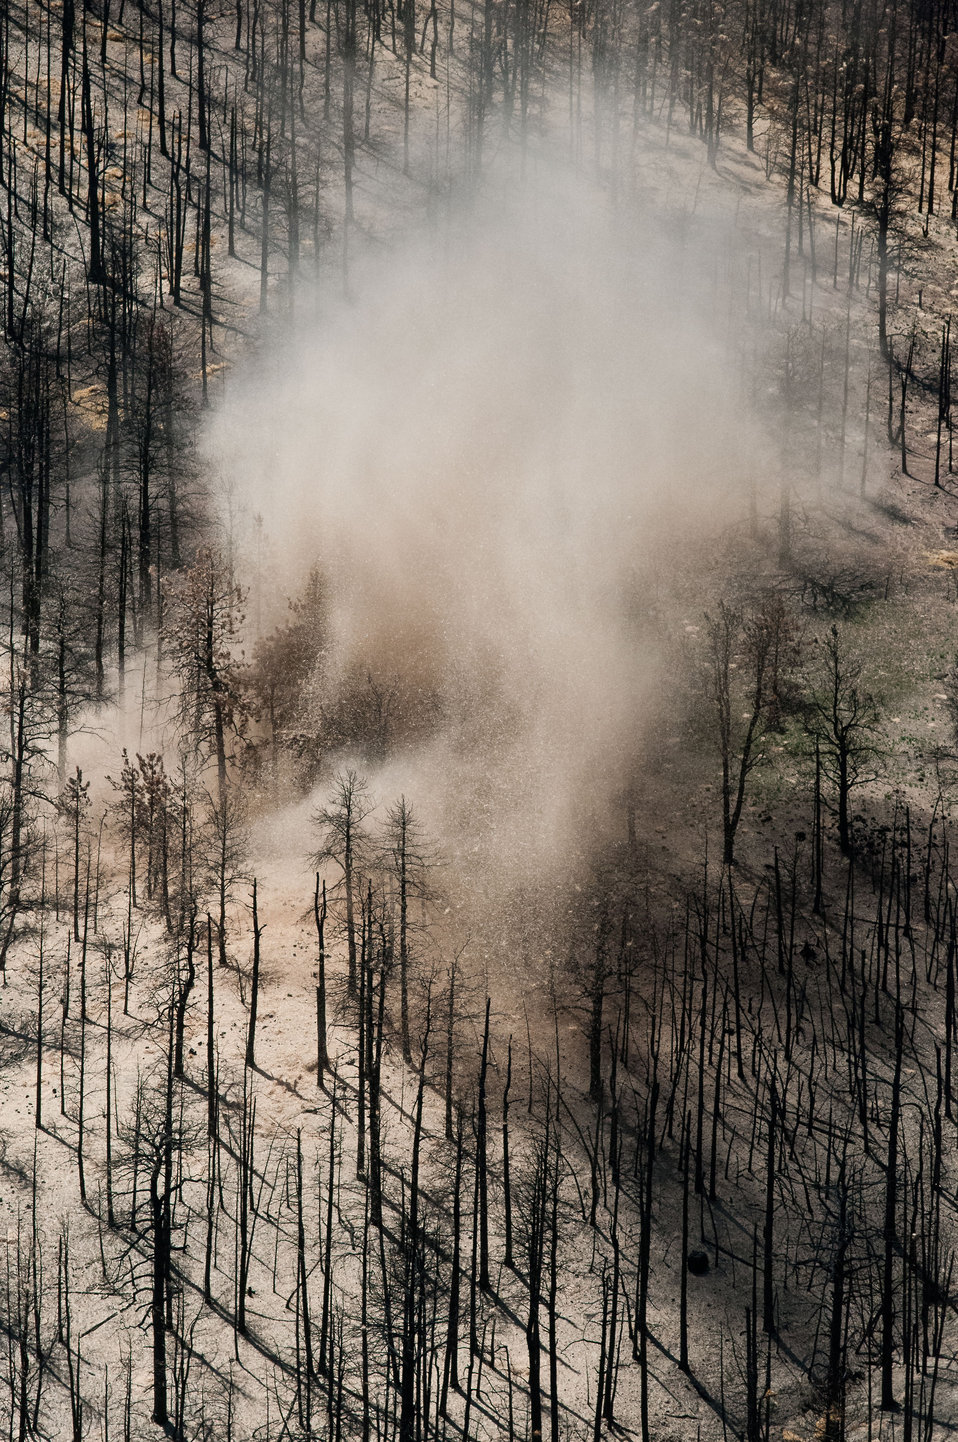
A ton of straw slowly falls during an aerial disbursement over a burned out area of the Poudre Canyon mountainside, on Friday, July 20, 2012, near Fort Collins, Colorado. This is an aerial application of straw that will mitigate soil and ash runoff from the mountainous terrain leading to Seaman Reservoir, drinking water resource for the City of Greeley. Forest Service lands receive straw, while private and other lands receive a seed mix and straw to promote ground cover plant growth on ash-covered lands. In total, 1,800 tons of straw will be applied during the 14-day operation. One quarter of the cost was paid by the City of Greeley and the U.S. Department of Agriculture funded the remainder. The Hewlett Gulch Fire was started by a camper’s alcohol stove, on May 14, at the saddle of a picturesque mountain ridge along the Hewlett Gulch Trail of Poudre Canyon, in the Roosevelt National Forest, 60 miles north of Denver. At it’s peak more than 400 firefighters were battling fires being pushed by 50 mph winds that helped blacken over 12-square-miles of dry ground cover, brush and trees. Many of the trees were already dead and tinder dry from beetle-kill. Their efforts have successfully kept water in the reservoir clean and clear, while downstream water flow has gone from famous Colorado clear water to nearly black flows of water heavily laden with ash, silt, and burnt debris that recent thunderstorms have already washed down from the mountainsides.